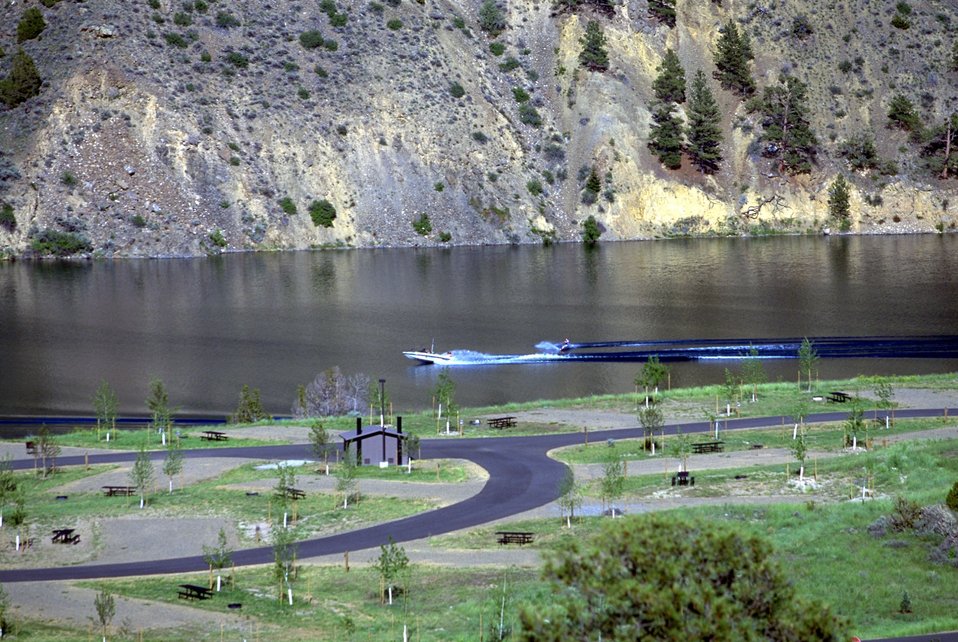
View of Devils Elbow Campground and water skier on Hauser Lake